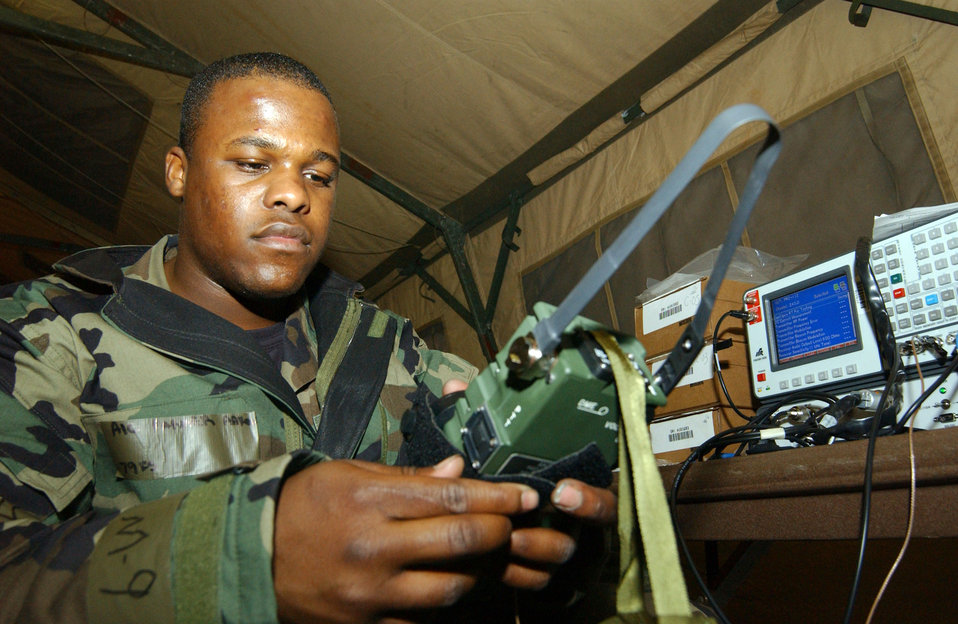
Sea lion

SHAW AIR FORCE BASE, S.C (AFPN) -- Airman 1st Class Aaron Parker performs initial testing for a PRC 112 radio during a Sea Lion exercise here. Airman Parker is an aircrew life support apprentice.